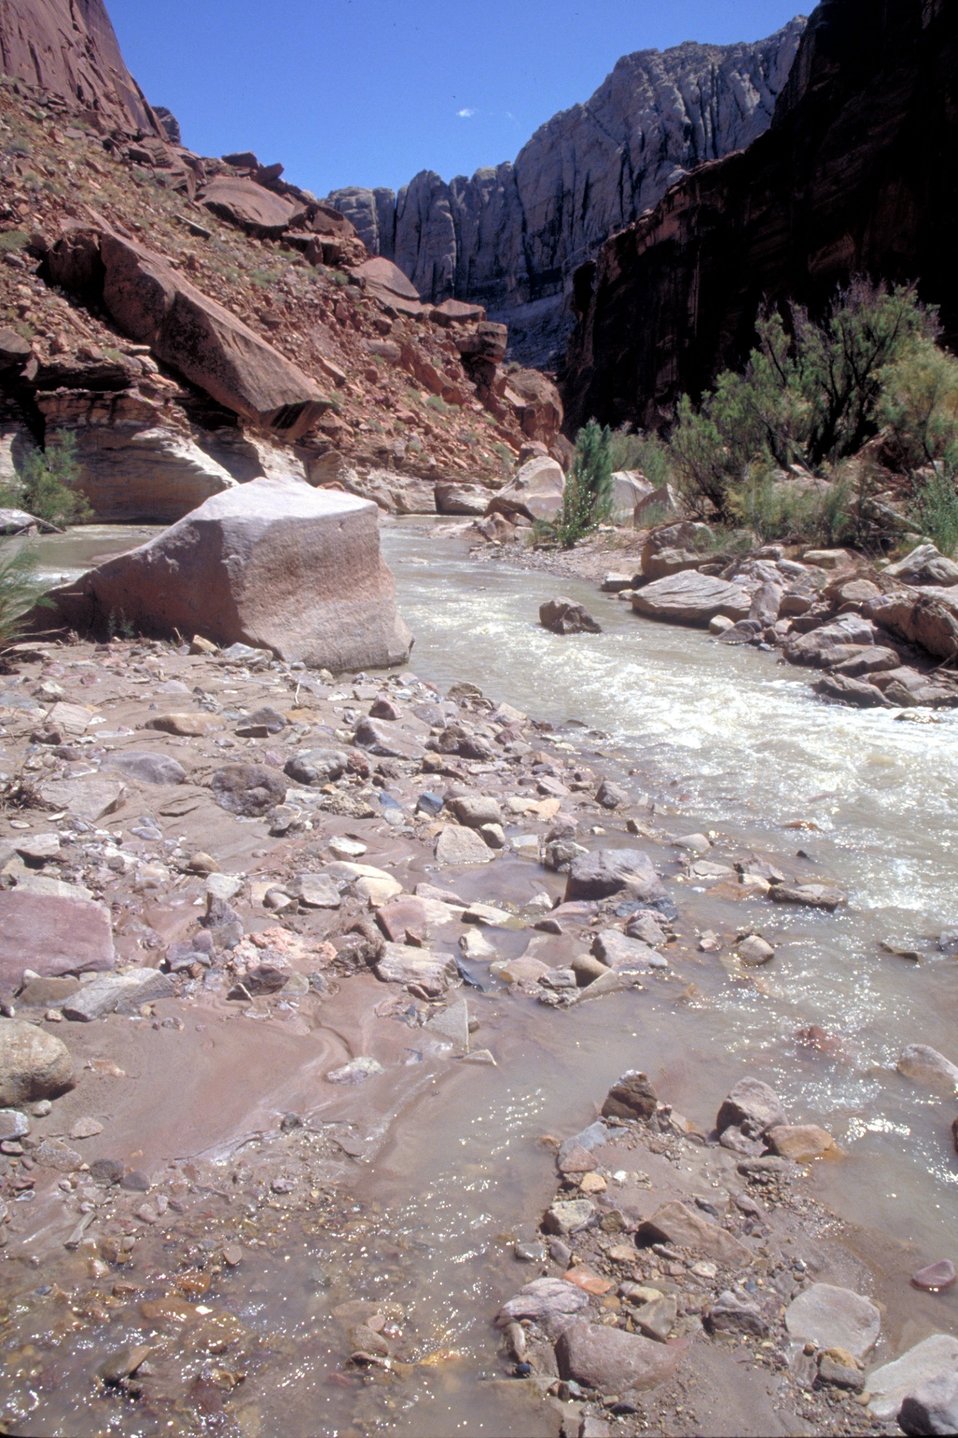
Upper Muddy Creek, San Rafael Swell